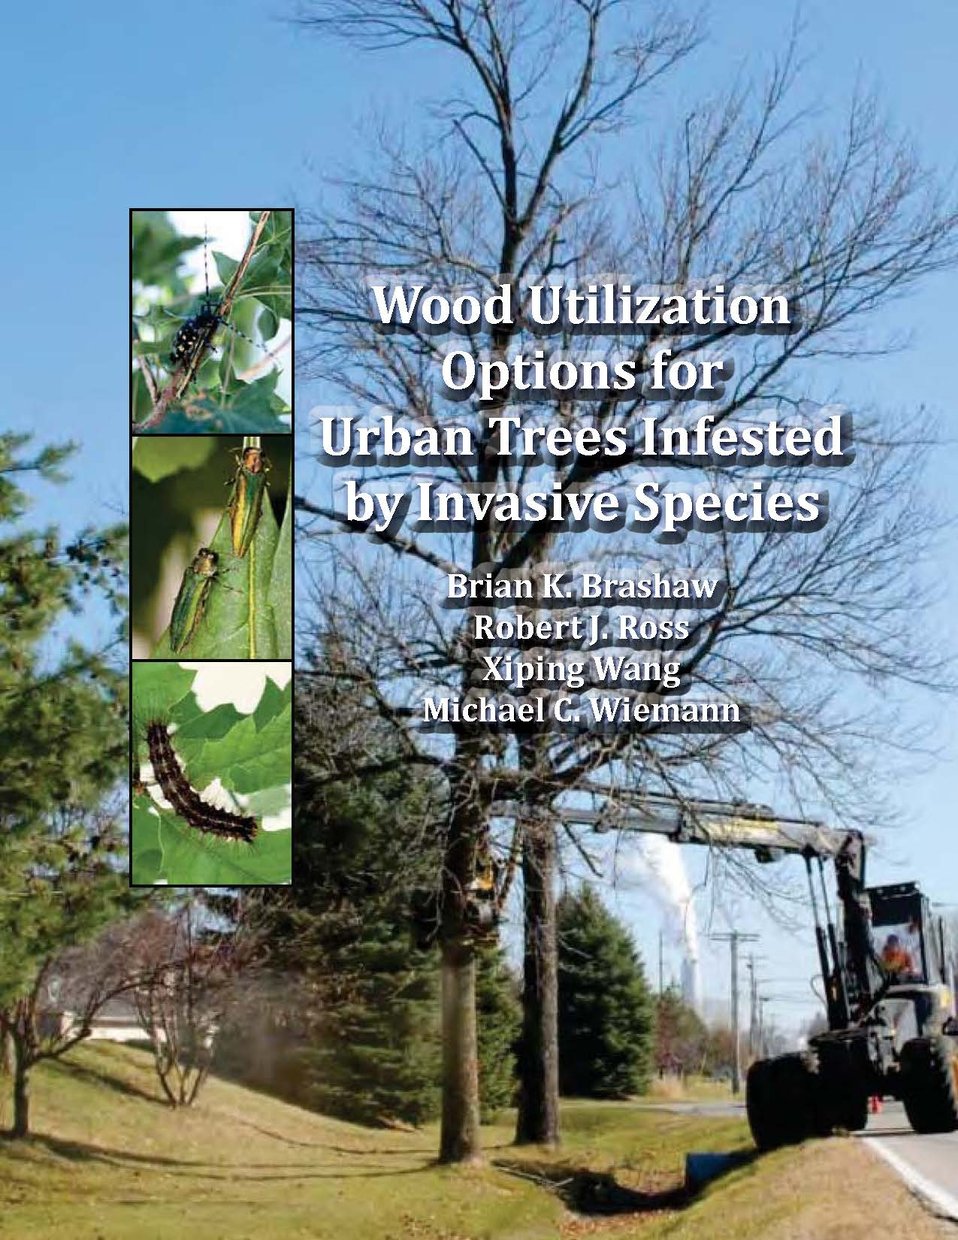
eab-manual

A new Forest Service manual provides advice on marketing the wood from infected trees.